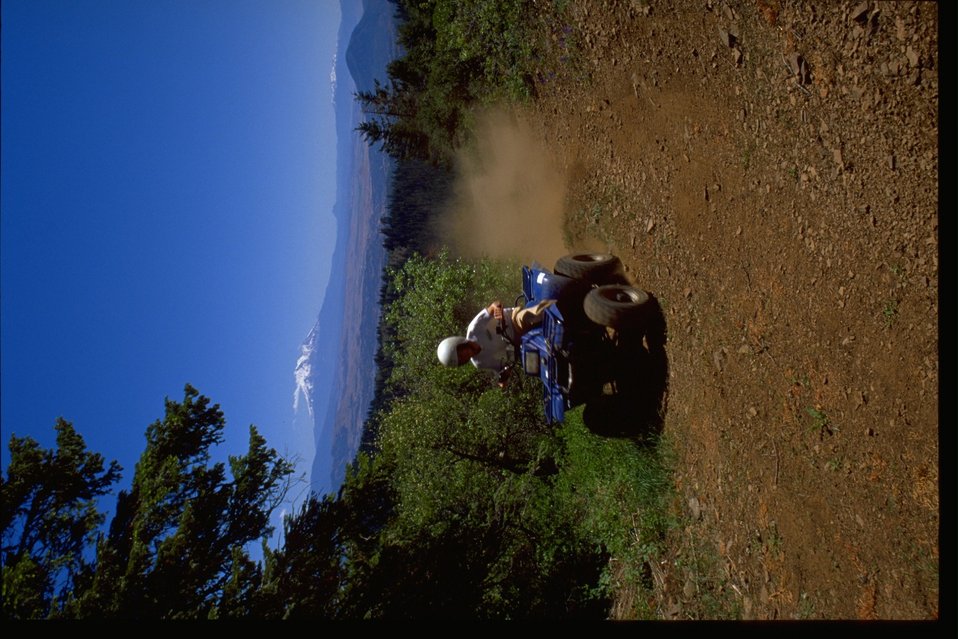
ATV rider on an off road vehicle.